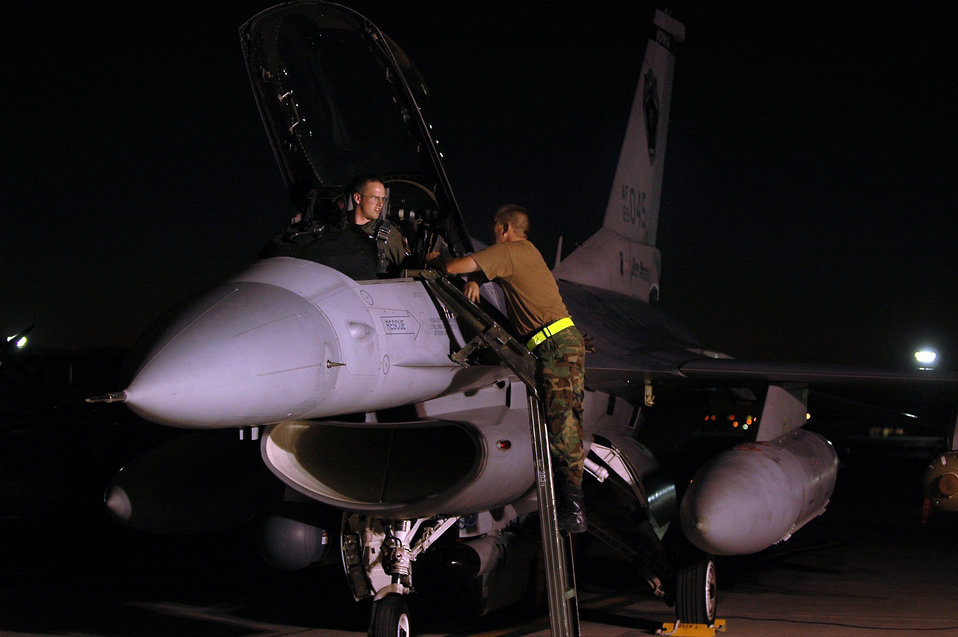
Red Flag

Capt. Jeremy Ryan and Tech. Sgt. Mike Johanns conduct final preflight inspections on an F-16 Fighting Falcon at Red Flag 06-02 at Nellis Air Force Base, Nev., on Aug. 15. U.S. and coalition servicemembers are participating in the exercise that concludes today. Captain Ryan is a pilot and Sergeant Johanns is a crew chief with the Iowa Air National Guard's 132nd Fighter Wing.